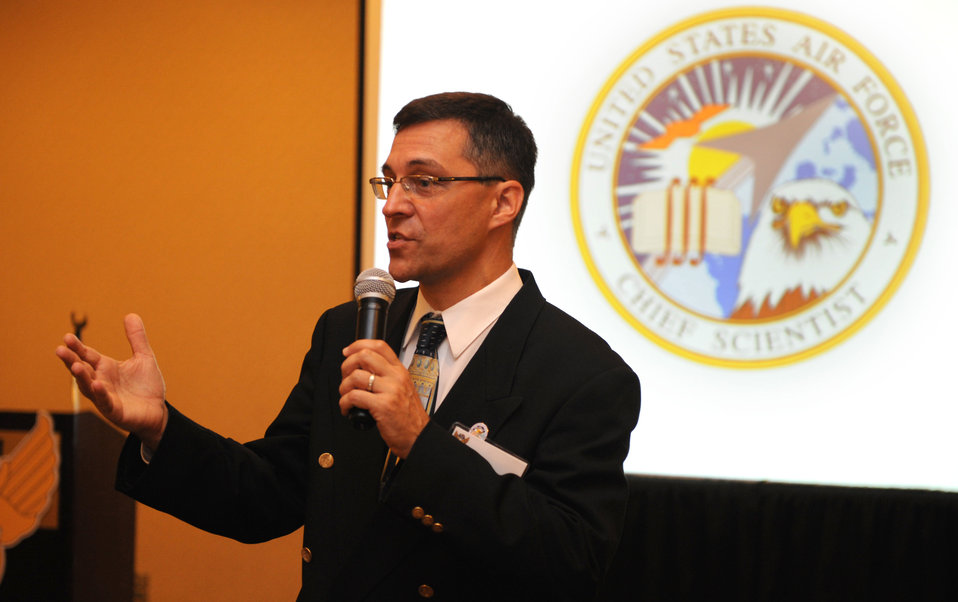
Top AF scientist speaks

Dr. Mark Maybury, Chief Scientist of the U.S. Air Force speaks about Air Force Cyber Vision 2025 at the Crystal City Marriott in Washinton D.C. on July 17, 2012. The Cyber Vision 2025 is the AF vision for the assured cyberspace advantage enabled by key science and technology advances where the AF will lead, follow, or watch in the near, mid and long term.